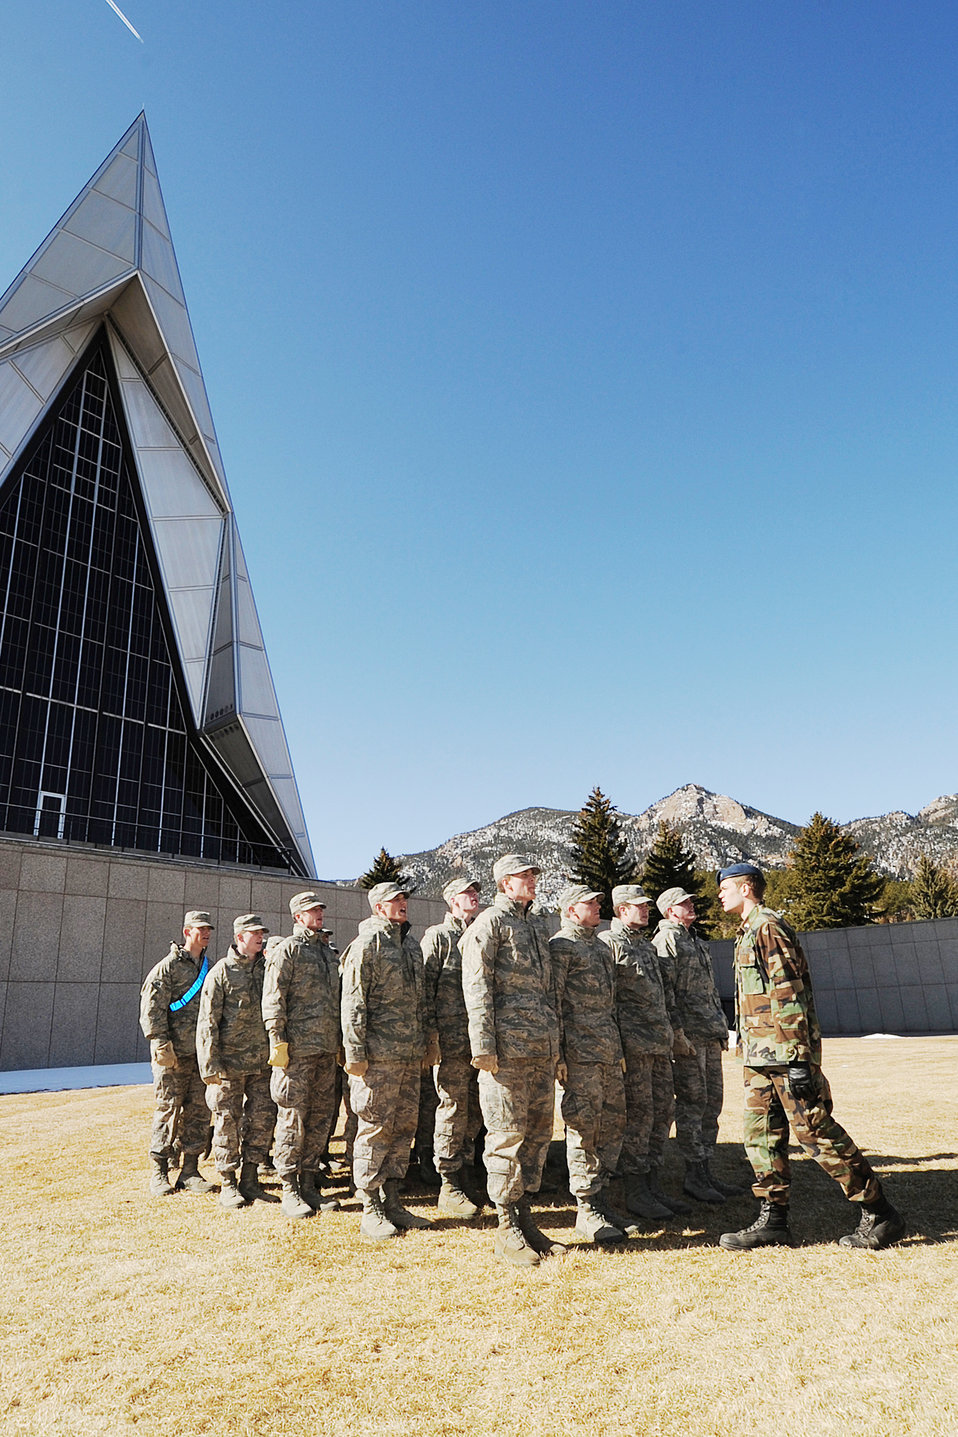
Recognition Days

Cadet freshmen members of Cadet Squadron 18 participate in Recognition events at the U.S. Air Force Academy, Colo., March 12, 2010. Recognition consists of several days of physical and mental challenges, and culminates with the freshmen's ascension into the ranks of the upper class cadets.